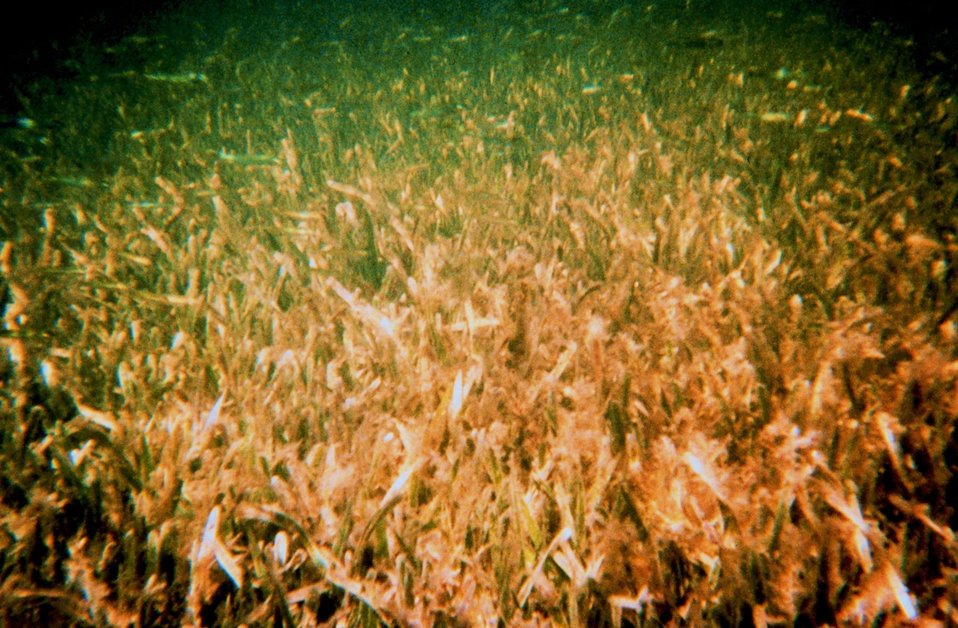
Seagrass extending offshore from mangrove shoreline Seagrass is critical habitat for shrimps, crabs, and small fish.